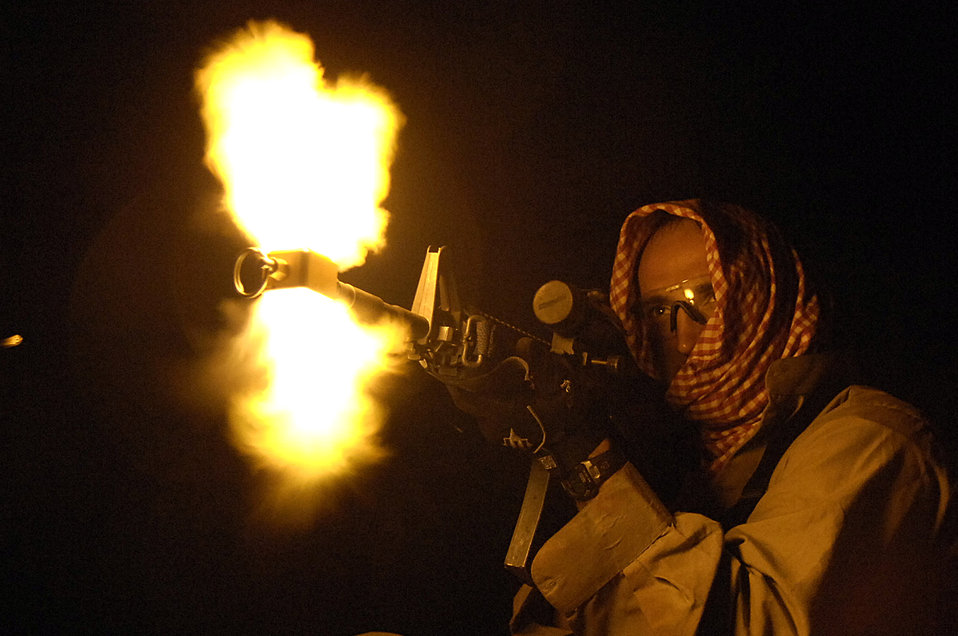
Atlantic Strike VII

A member of the opposing forces engages Soldiers, Airmen and Marines in simulated combat June 16 during Atlantic Strike VII at the Avon Park Air Ground training Complex, Avon Park, Fla. Atlantic Strike is a joint-forces training event involving joint terminal attack controllers from the Army, Air Force and Marines and is held semi-annually.